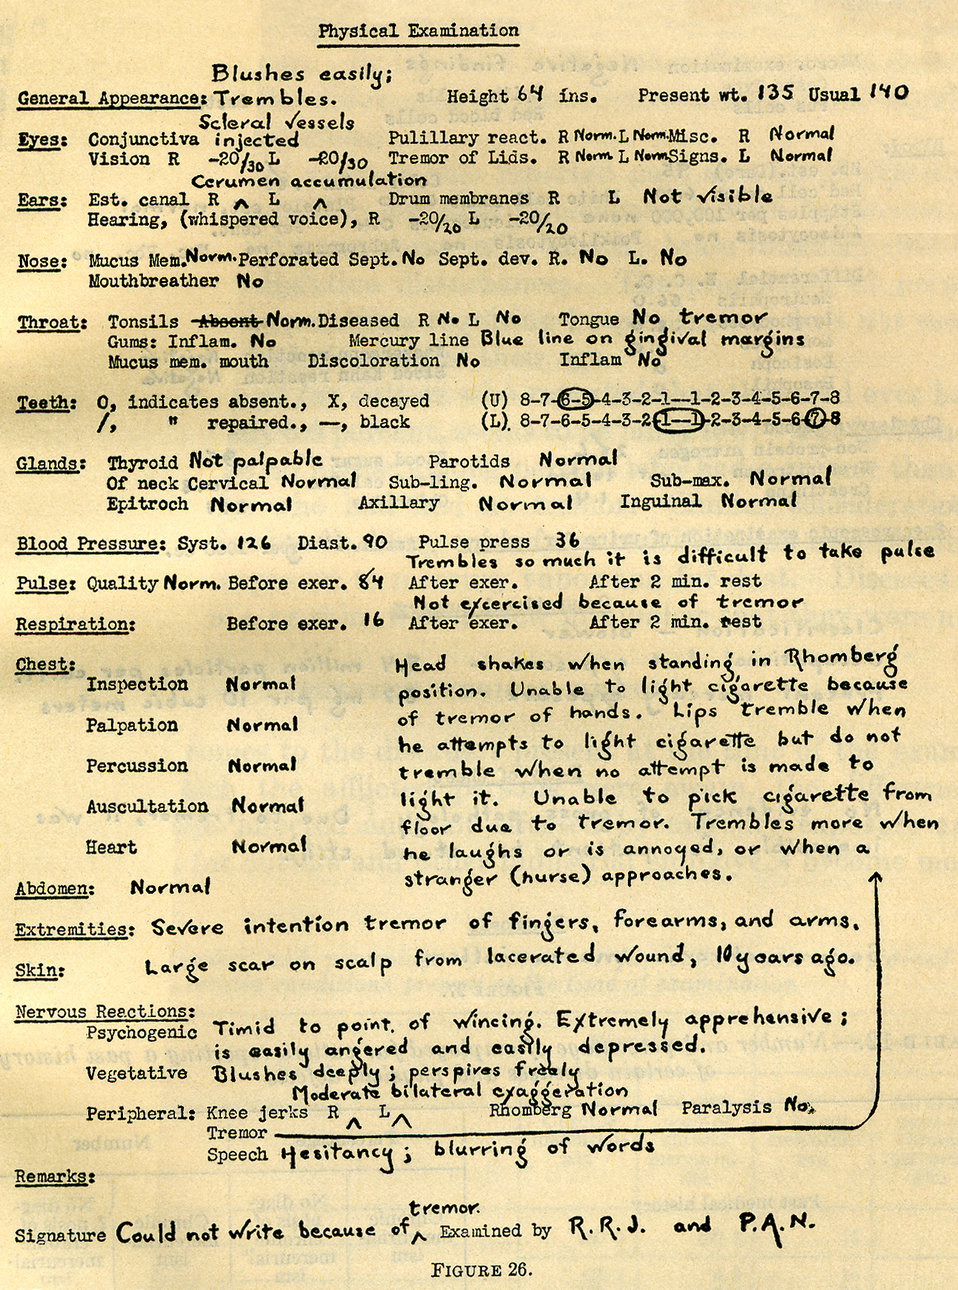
Depicted here in this historic image, was a report page taken from a history and physical recorded during the examination of a hat-manufacturing fur cutter, who'd been exposed to mercury while processing animal furs to be used in the creation of hats. The photograph was provided by the Center for Disease Control's (CDC), National Institute for Occupational Safety and Health (NIOSH). Mercury is used in the 'carroting' of animal pelts. Carroting is the process of treating 'hatters'' fur with mercury nitrate, thereby, rendering the fur suitable for manufacturing hats. If precautions are not taken, such as wearing a filtered breathing mask, or gloves, mercury exposure was quite likely, and could lead to heavy metal poisoning, with severe pathologic neurological consequences.